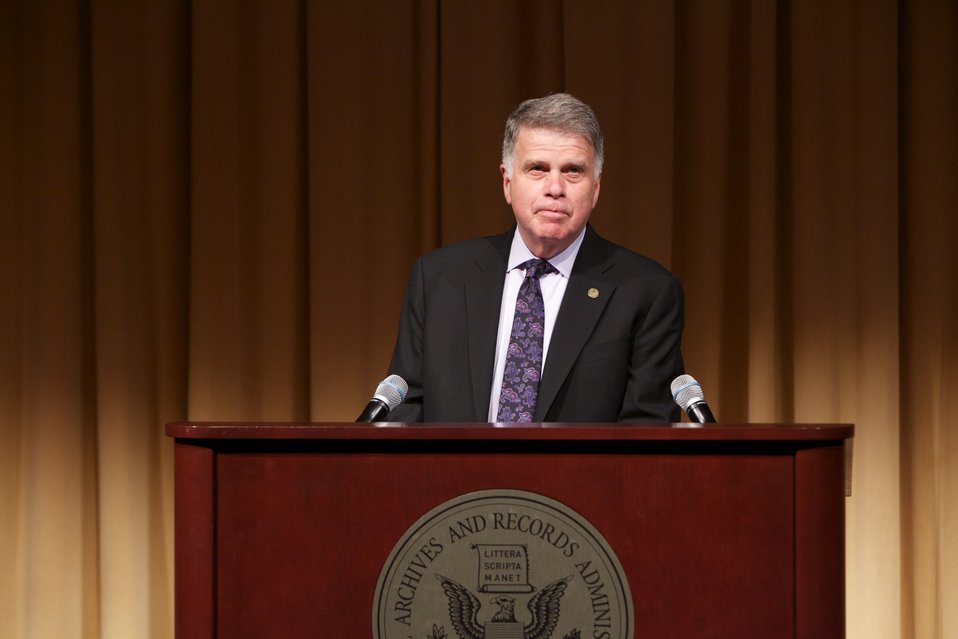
The Keillor Reader